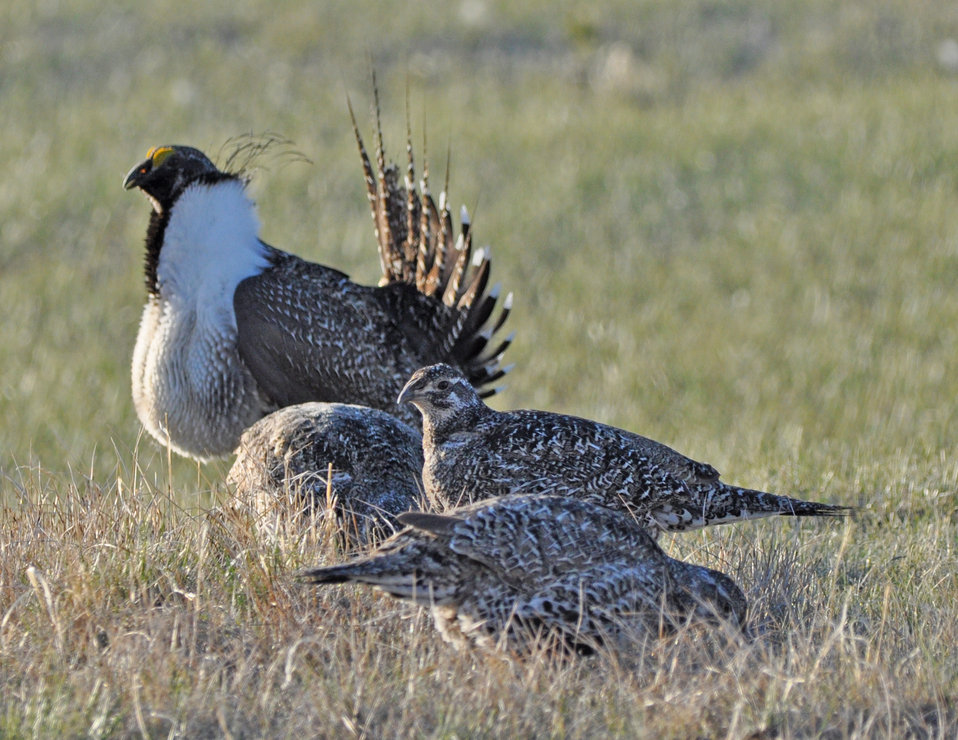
Greater Sage-Grouse

Photo Credit: Jeannie Stafford/USFWS
A greater sage-grouse male struts for a female at a lek (dancing or mating ground) near Bridgeport, CA.